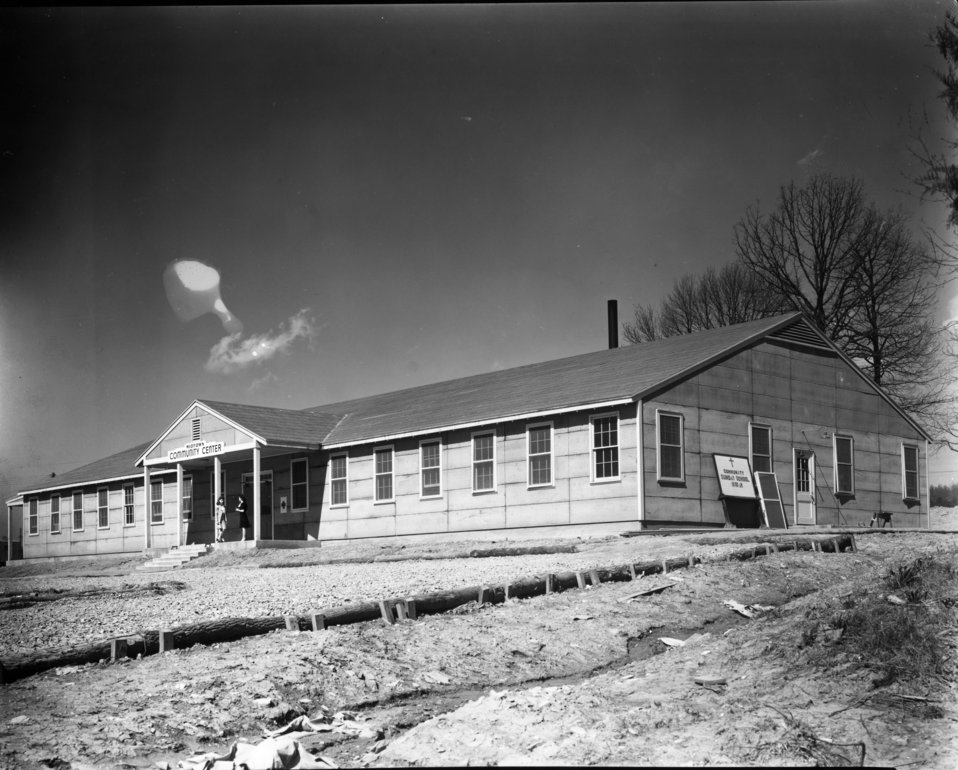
Recreation at Oak Ridge